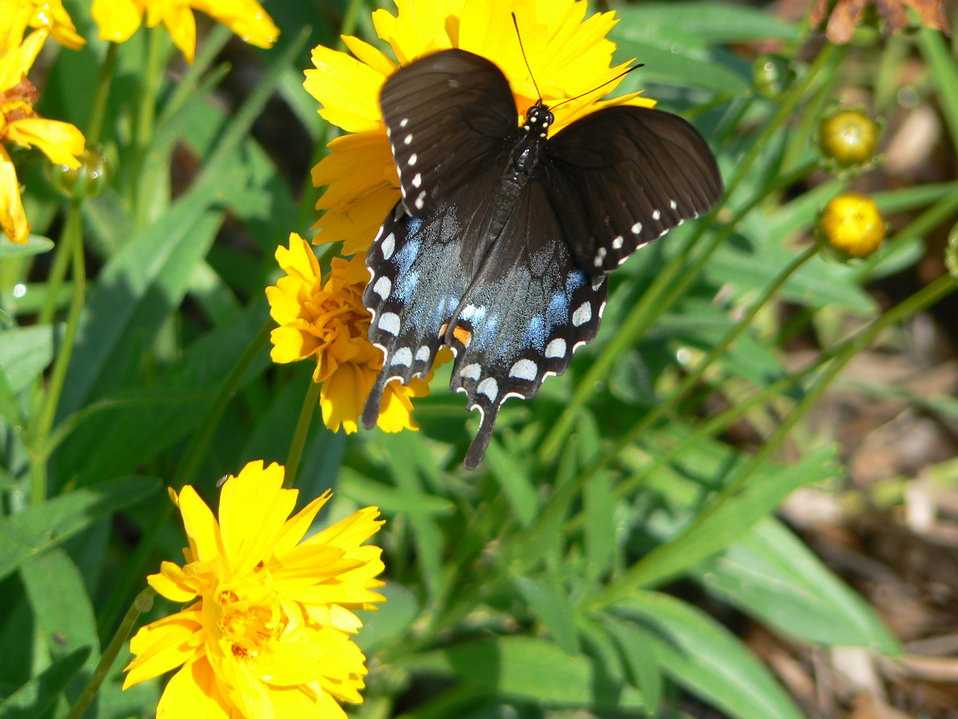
Spicebush swallowtail at Cape May National Wildlife Refuge.